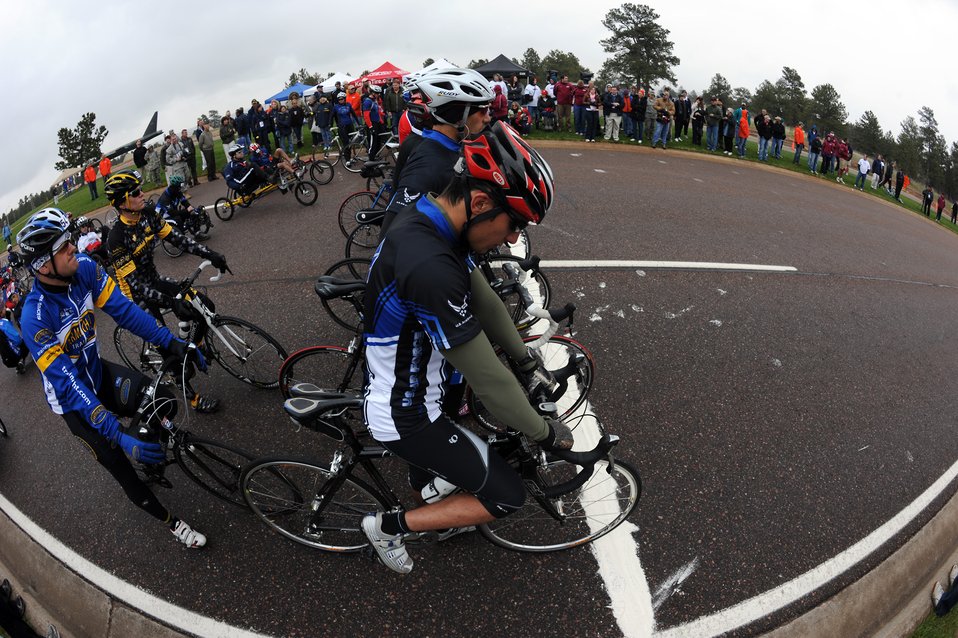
Warrior Games AF Cycling

Warrior Games athletes wait for the signal to begin the 20-kilometer upright bike race for the inaugural Warrior Games May 13, 2010, at the U.S. Air Force Academy in Colorado Springs, Colo.